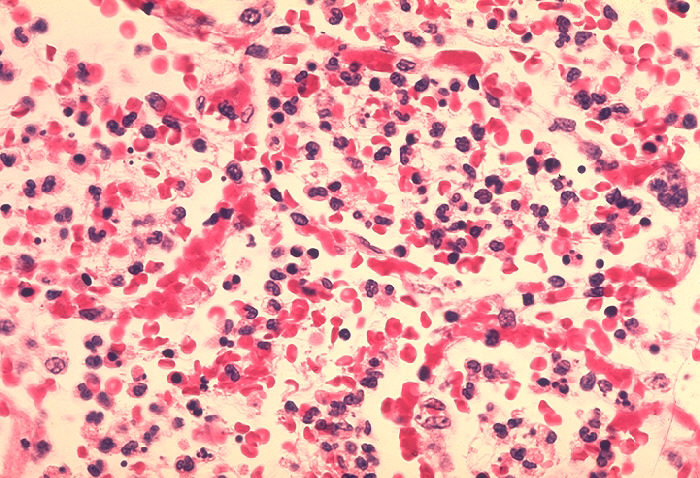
Histopathology of lung in fatal human plague.